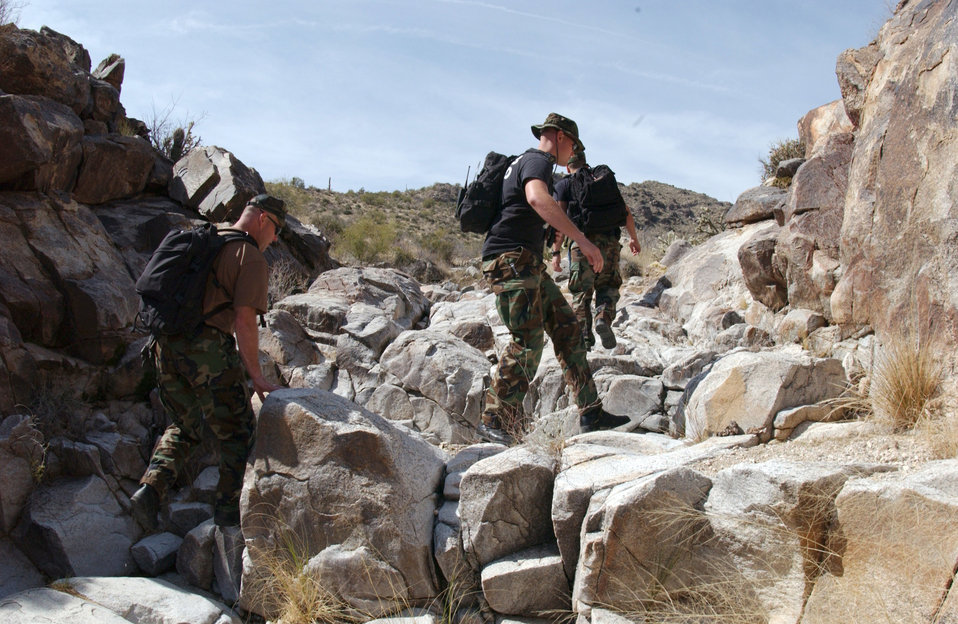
Hiker finds F-16 rack

Airmen with the 56th Civil Engineer Squadron explosive ordnance disposal unit and the 56th Equipment Maintenance Squadron at Luke Air Force Base, Ariz., hike up the White Tank Mountains on Thursday, March 23, 2006. The group was going to the site of an F-16 Fighting Falcon triple ejector rack to ensure it didn't contain unexploded cartridges. The rack was released from a 61st Fighter Squadron F-16 during an in-flight emergency on Aug. 11, 2003. A local resident found the item while hiking and led the Air Force team to the site.